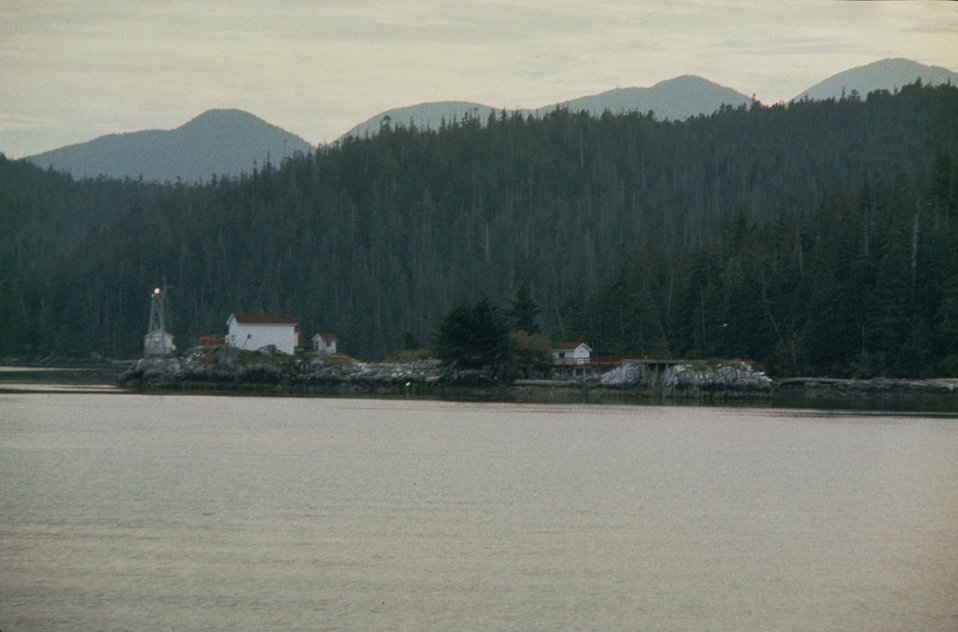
A scene on the Inside Passage